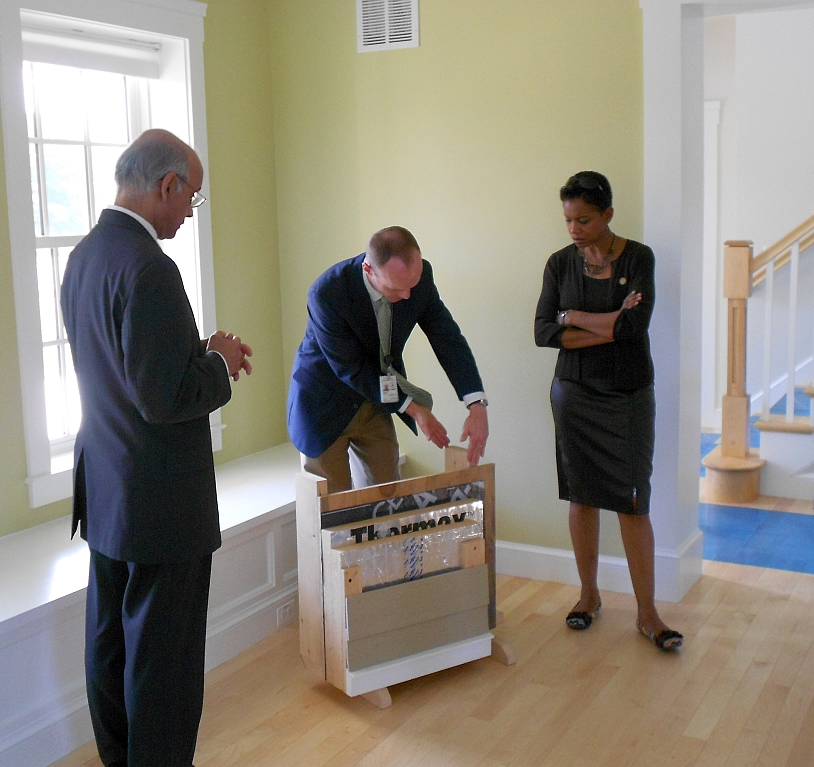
Edwards NZERTF Tour #2

NIST Engineering Laboratory Director Shyam Sunder (left) and William Healy (center), Leader of the Alternative Energy Systems Group in the Engineering Laboratory explain the insulation properties built into the NIST Net Zero Energy Residential Test Facility to U.S. Congresswoman Donna Edwards (right) from Maryland’s 4th District.